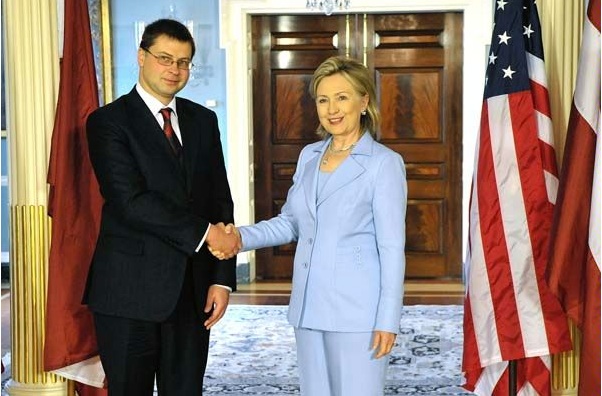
Secretary Clinton Shakes Hands With Latvian Prime Minister Valdis Dombrovskis

U.S. Secretary of State Hillary Rodham Clinton shakes hands with Latvian Prime Minister Valdis Dombrovskis after a bilateral meeting at the U.S. Department of State in Washington, D.C., on June 15, 2010.